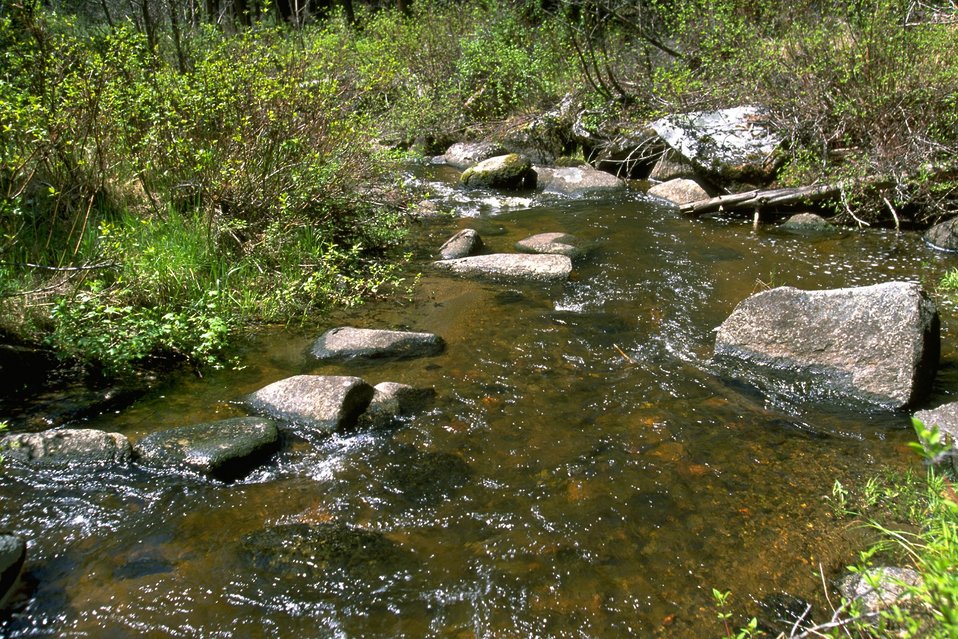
Rocks in Moose Creek